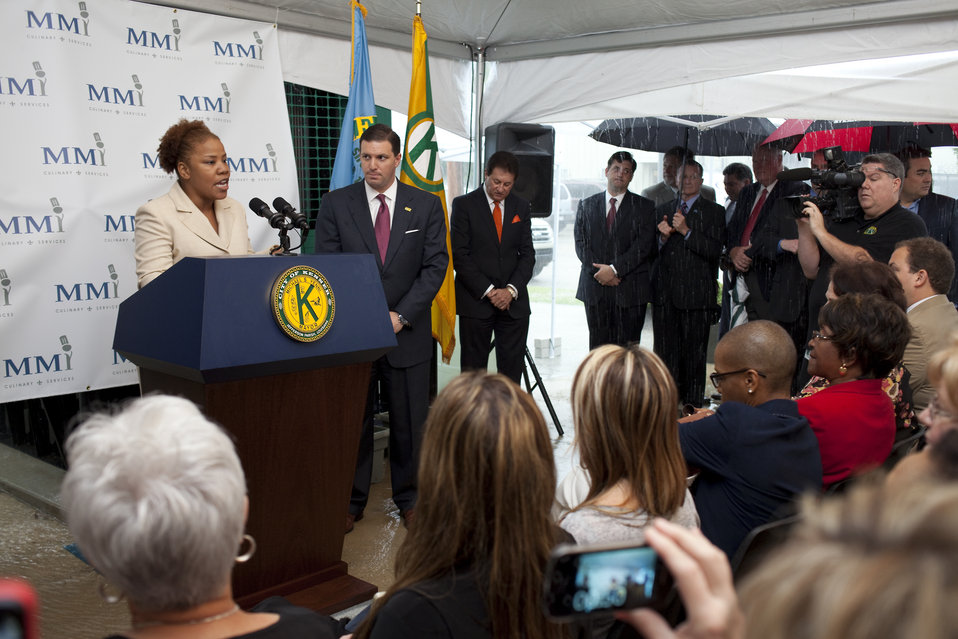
New Orleans No Kids Hungry program representative Rhonda Johnson speaks during Agriculture Secretary Tom Vilsack's visit to MMI, Inc. in Kenner, LA on Wednesday, May 1, 2013.